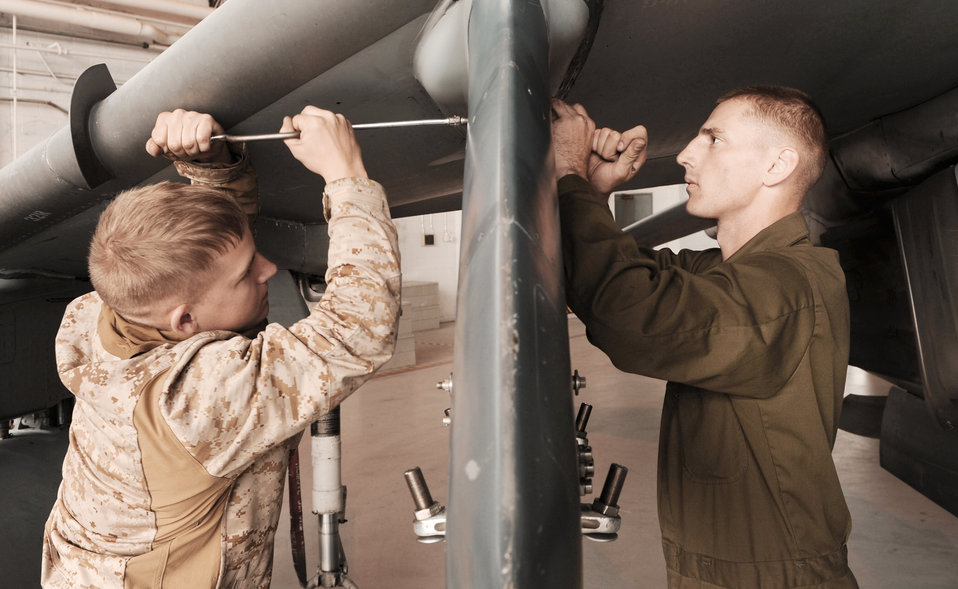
Exercise Mountain Roundup

Cpl. Jason Fowler (left) and Lance Cpl. Wayne Aman, both Marine Attack Squadron 542 ordnance technicians from Cherry Point, N.C., fix a fuel leak on an AV-8B Harrier II Oct. 21, 2009, during the Mountain Roundup exercise at Mountain Home Air Force Base, Idaho. Mountain Roundup is a large-force exercise running Oct. 15 through Oct. 30 and includes participants from the German air force, U.S. Air Force, U.S. Navy and U.S. Marines.